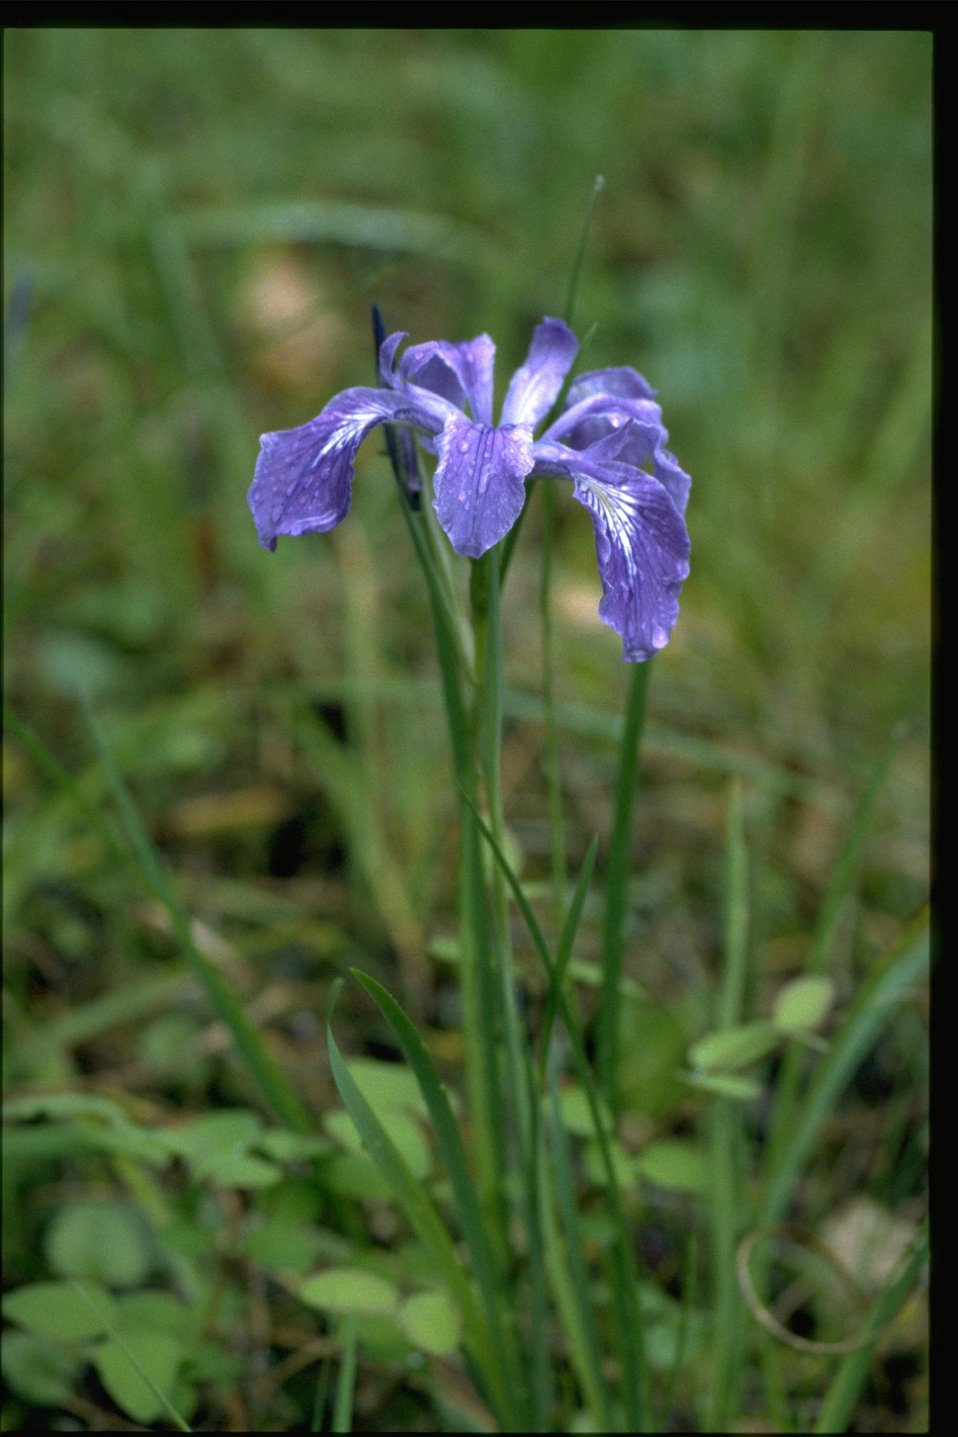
Medium shot of Iris tenax.